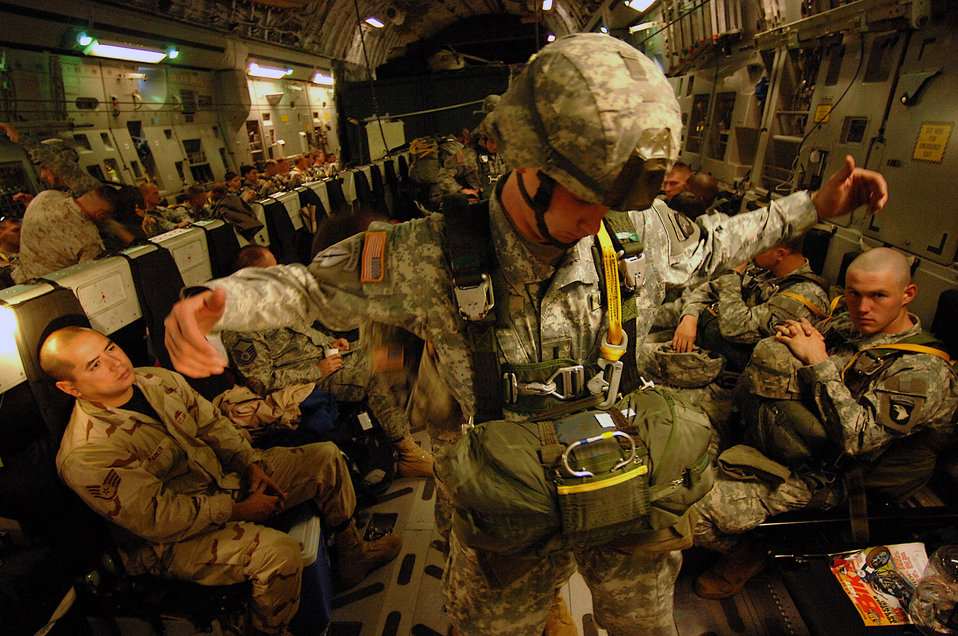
Exercise Bright Star 2007

U.S. Army paratroopers from the 20th Engineering Brigade, 101st Airborne Division, Fort Campbell, Ky., and Egyptian paratroopers prepare their chutes aboard a Charleston Air Force Base, S.C., C-17 Globemaster III aircraft for an air drop into Cairo, Egypt, Nov. 7 as part of exercise Bright Star 2007.